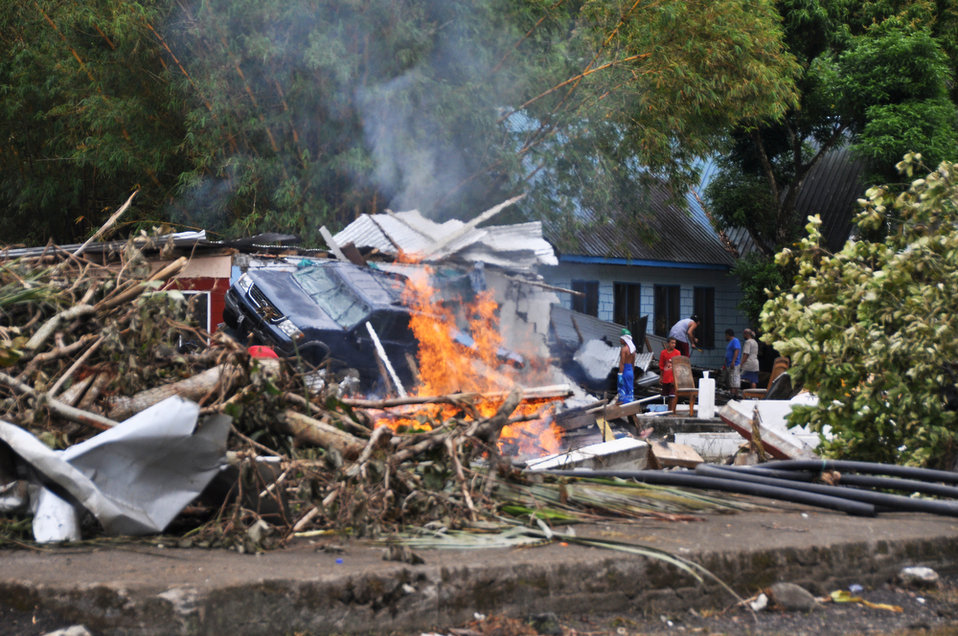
Hawaii Guard members assess damages in American Samoa

A trash fire buns in the foreground of a car that hangs off the side of porch roof Oct. 1, 2009, in Pago Pago, American Samoa. The island nation was struck Sept. 29 by an 8.3 magnitude earthquake generating 15-foot waves and destroying whole villages.